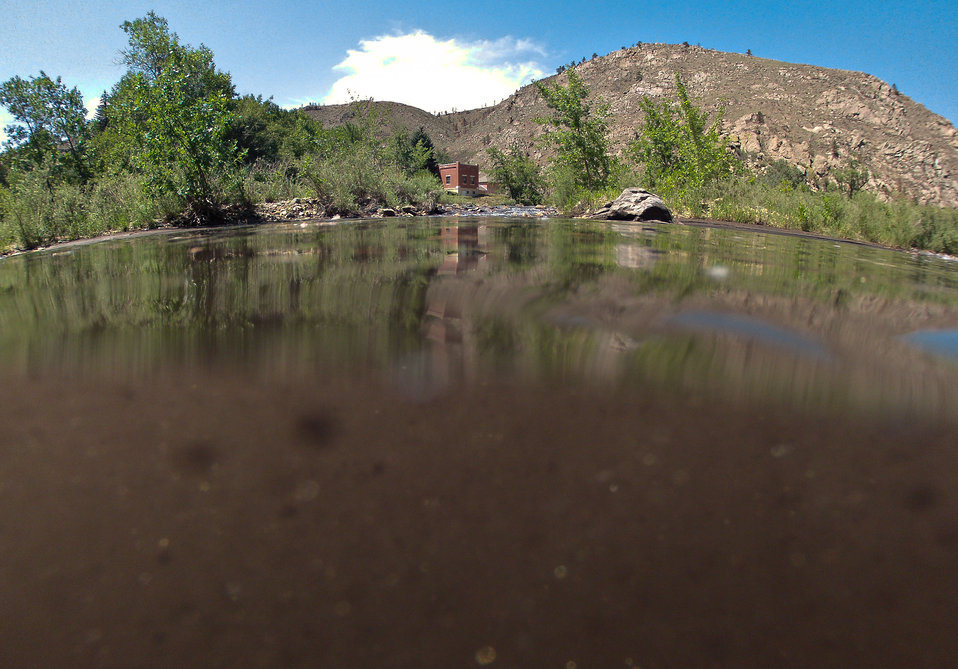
Underwater view of what would normally be clear mountain waters at a confluence of two tributaries, the Cache la Poudre and the North Fork of the Cache la Poudre, near Seaman Reservoir, 60 miles north of Denver, Colorado on Friday, July 20, 2012. Because of the Hewlett Gulch Fire (May 14, 2012), in the Poudre Canyon area clear water has been transformed to nearly black water, heavily laden with ash, silt, and burnt debris washed down mountainsides by thunderstorms. At its peak more than 400 firefighters were battling fires pushed by 50 mph winds. When the last embers were cooled, more than 12-square miles lay blacked at a cost of approximately 3.2 million dollars. The aerial distribution of straw has successfully kept nearby Seaman Reservoir clean for the drinking water of the City of Greeley. Forest Service lands receive straw, while private and other lands receive a seed mix and straw to promote ground cover plant growth on ash-covered lands. In total, 1,800 tons of straw will be applied during the 14-day operation. One quarter of the cost was paid by the City of Greeley and the U.S. Department of Agriculture funded the remainder.